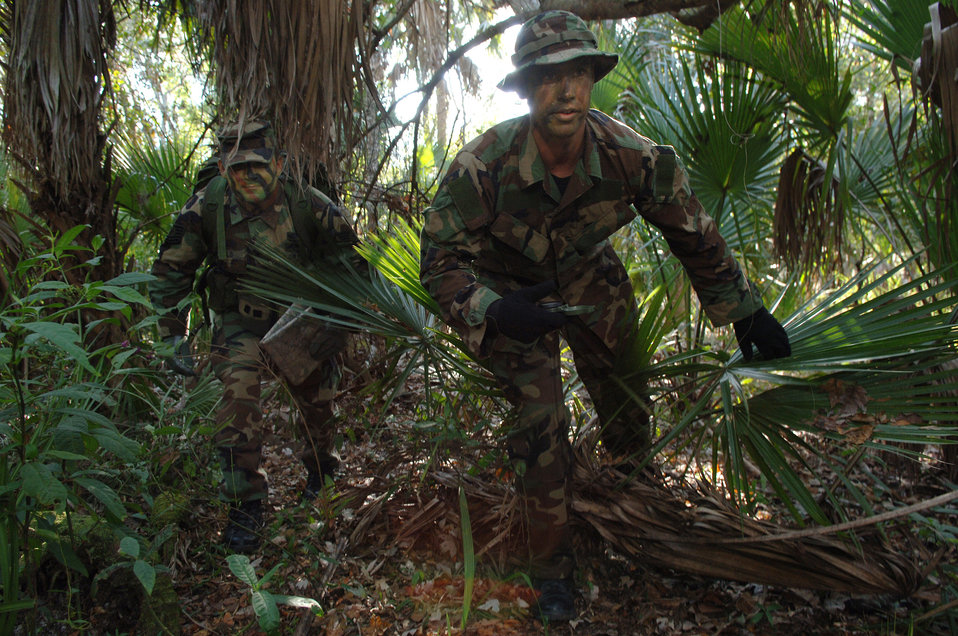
Atlantic Rescue

Tech. Sgt. Jesse Arnold (left) and Senior Airman Ryan Gaspard practice evasion movements during Exercise Atlantic Rescue at Avon Park, Fla., Nov. 1. They are survivial, evasion, resistance and escape, or SERE, specialists.